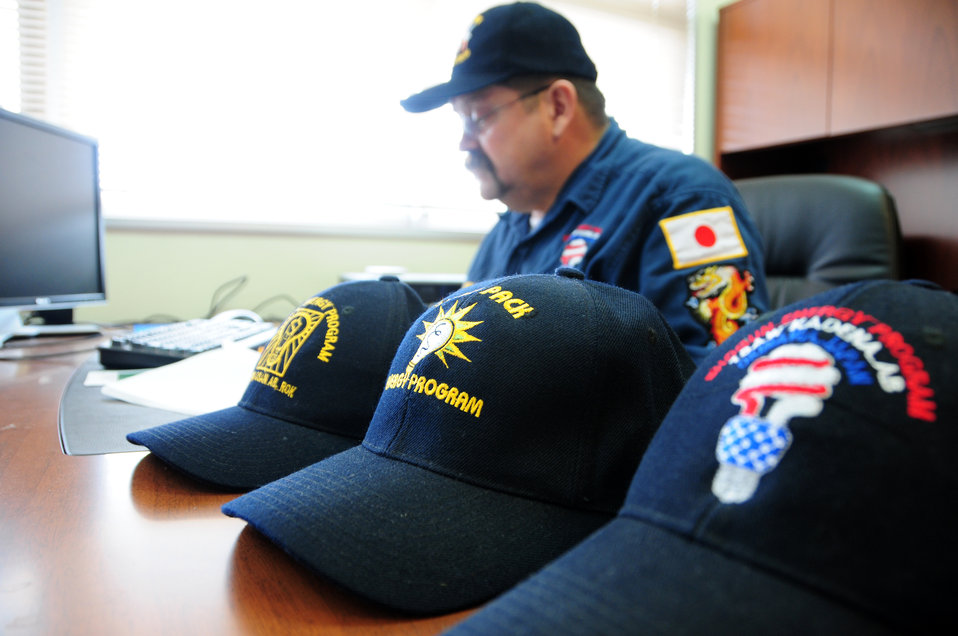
Energy Guy

John Muckey, a resource efficiency manager for the 718th Civil Engineer Squadron at Kadena Air Base, Japan, looks over analytical charts on energy conservation. Mr. Muckey, known around the base as